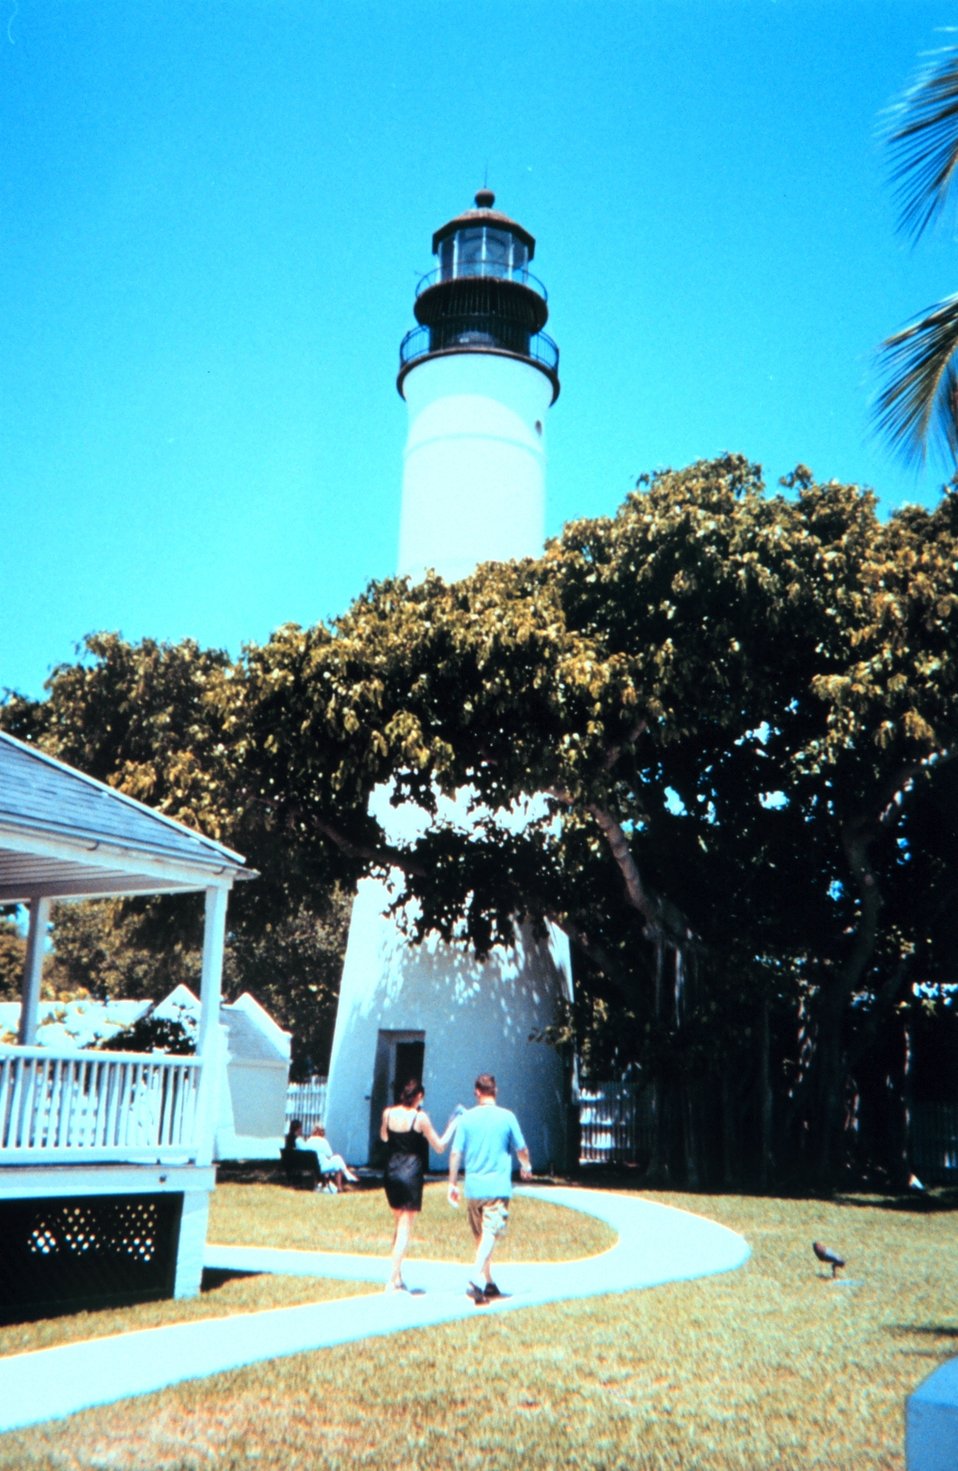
The lighthouse at Key West.